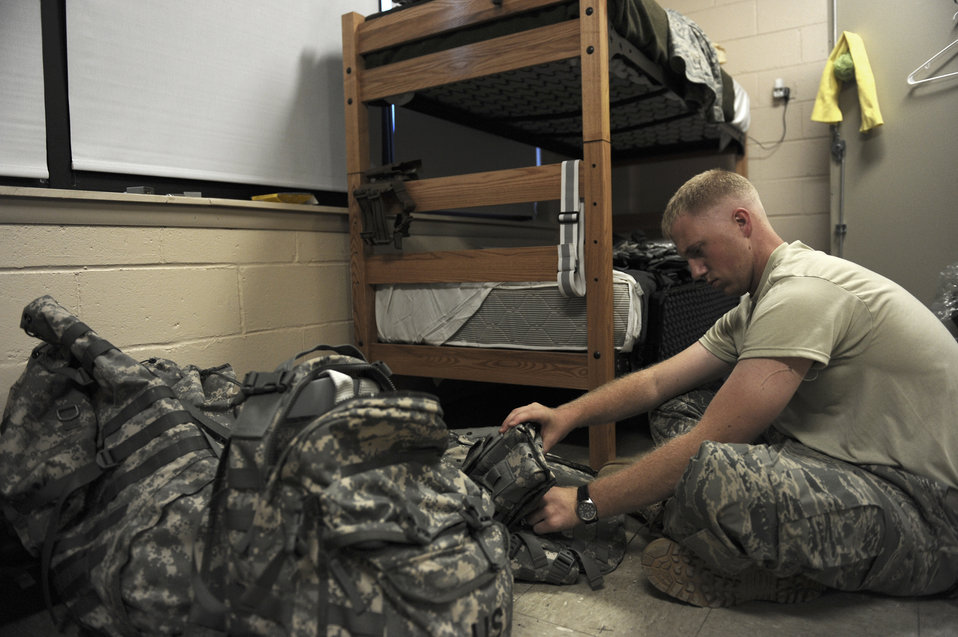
Combat Skills Training

Senior Airman Chris Hayes inspects his equipment during Combat Skills Training July 26 at Fort Dix, N.J. CST is a month-long Army training program that prepares Airmen for Joint Expeditionary Tasking combat roles augmenting the U.S. Army. Airman Hayes is a traffic management journeyman assigned to the 60th Aerial Port Squadron at Travis Air Force Base, Calif.